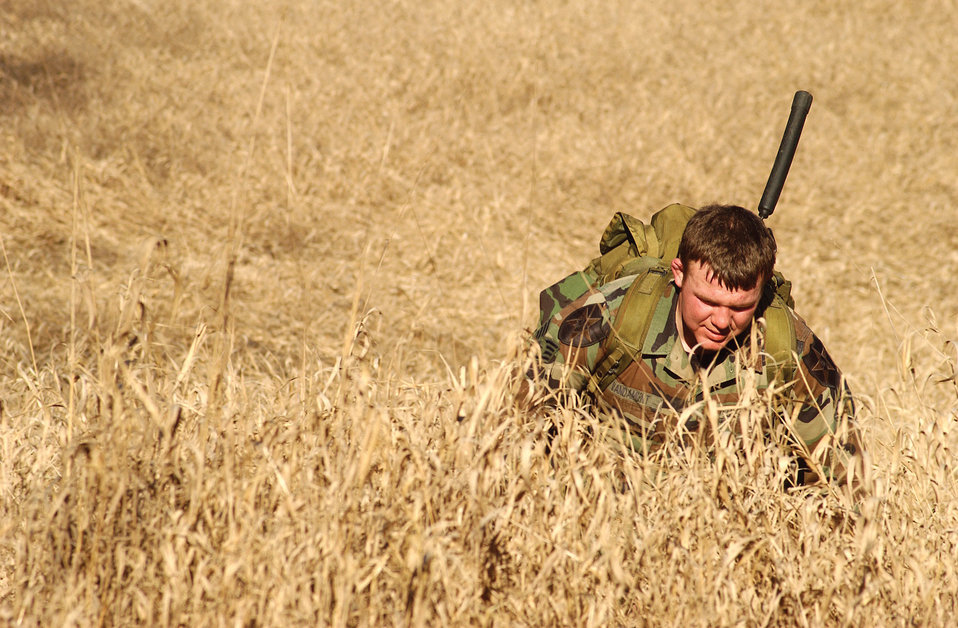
Hide and seek

MCCHORD AIR BASE, Wash. -- Staff Sgt. James Vandament makes his way over the ridgeline here after spending six hours finding 15 possible markers using GPS equipment and dead reckoning skills during Cascade Challenge on Feb. 9. Sergeant Vandament is assigned to the 5th Air Support Operations Squadron.